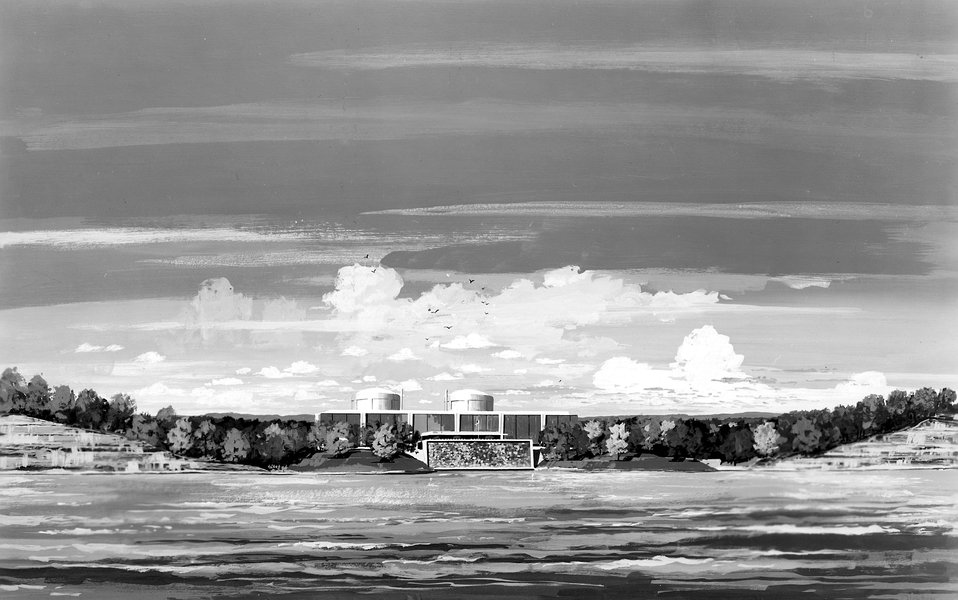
Artist's rendering of the Baltimore Gas & Electric Company's Calvert Cliffs Nuclear Power Units 1 and 2 at Lusby, Maryland. Circa 1970.